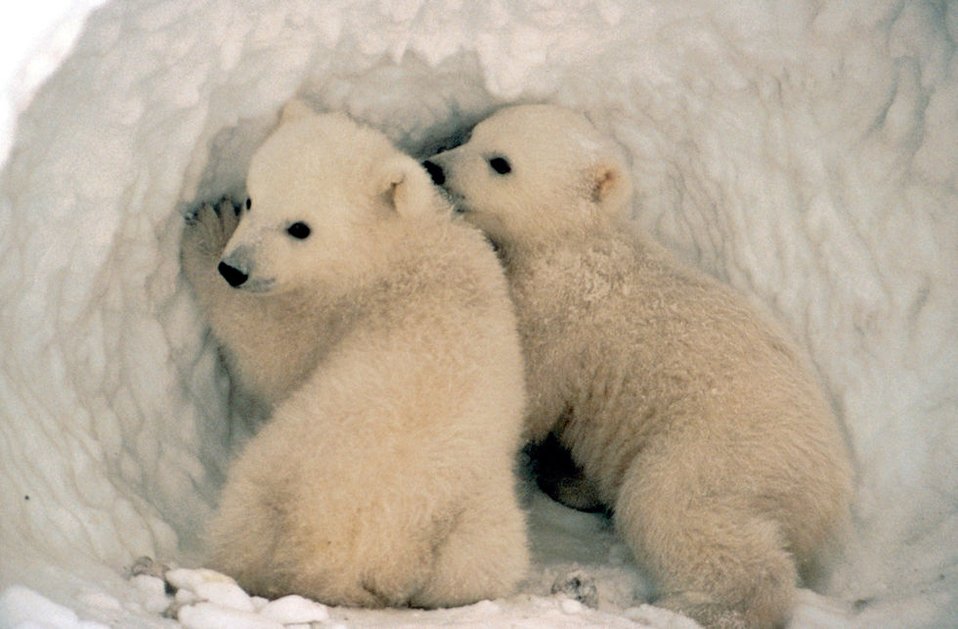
Polar bear cubs.